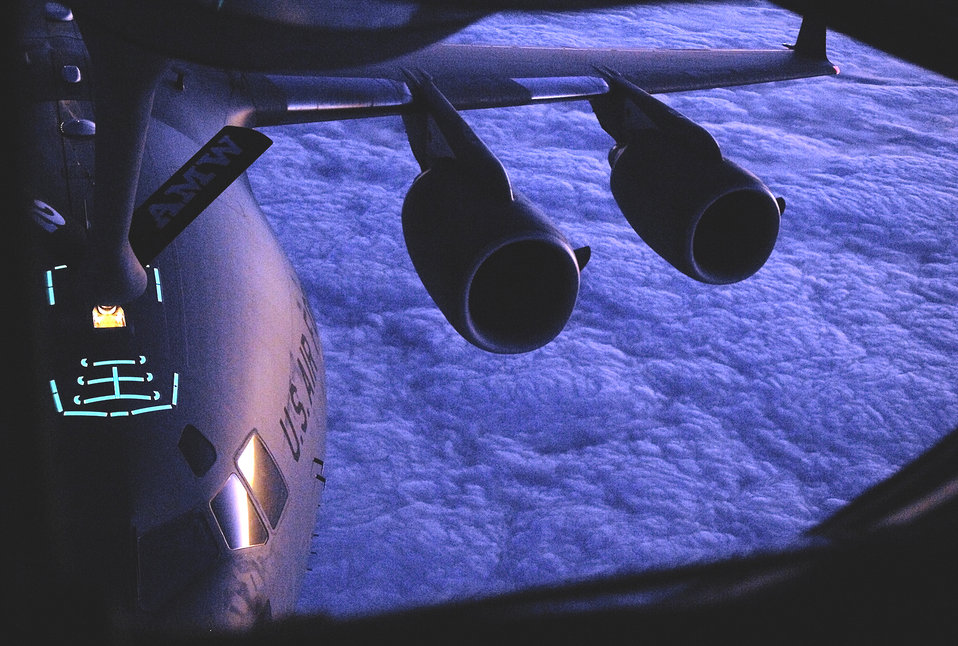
No waiting at the pump

A C-17 Globemaster III aircraft moves into position to receive fuel from a KC-135 Stratotanker July 30 during a refueling mission over the Pacific Ocean. The aircraft are from the 452nd Air Mobility Wing out of March Air Reserve Base, Calif.